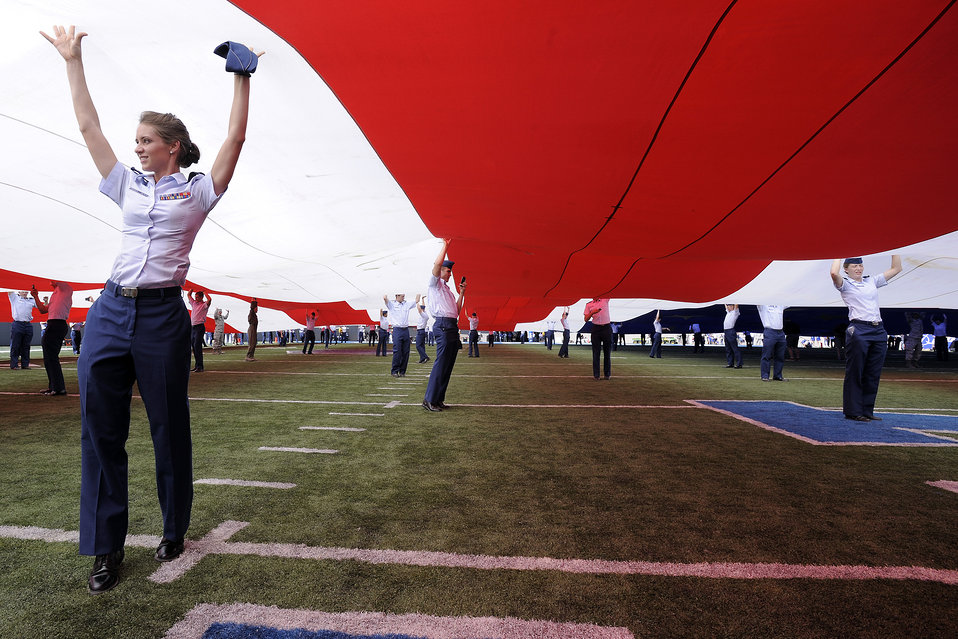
Blanket of freedom

A 300-foot-long American flag is unfurled on the field at Falcon Stadium during halftime activities as the U.S. Air Force Academy Falcons met the Texas Christian University Horned Frogs Sept. 10, 2011, at Falcon Stadium in Colorado Springs, Colo. The Horned Frogs defeated Air Force 35-19.